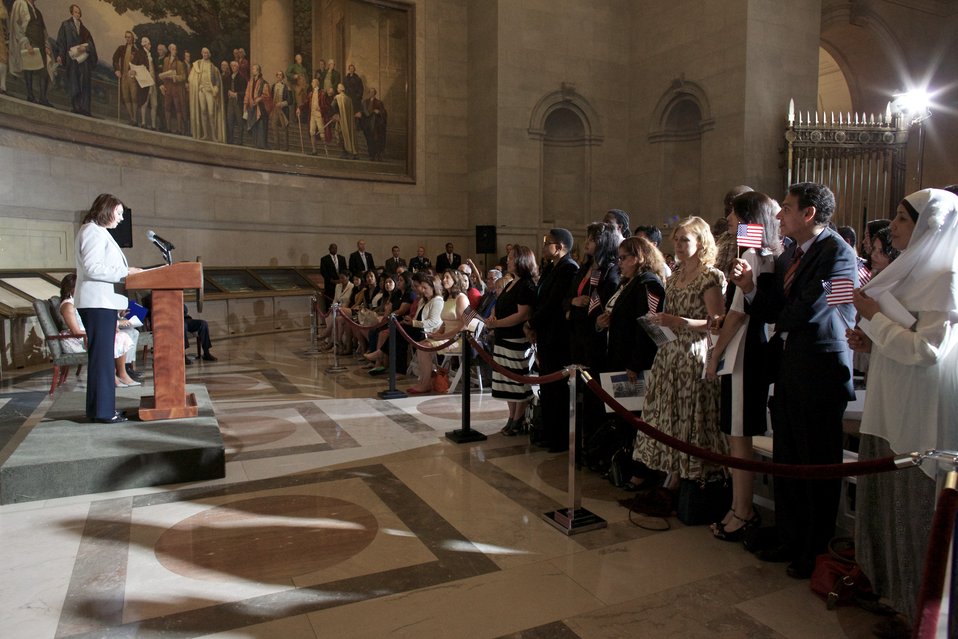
Naturalization Ceremony with Michelle Obama